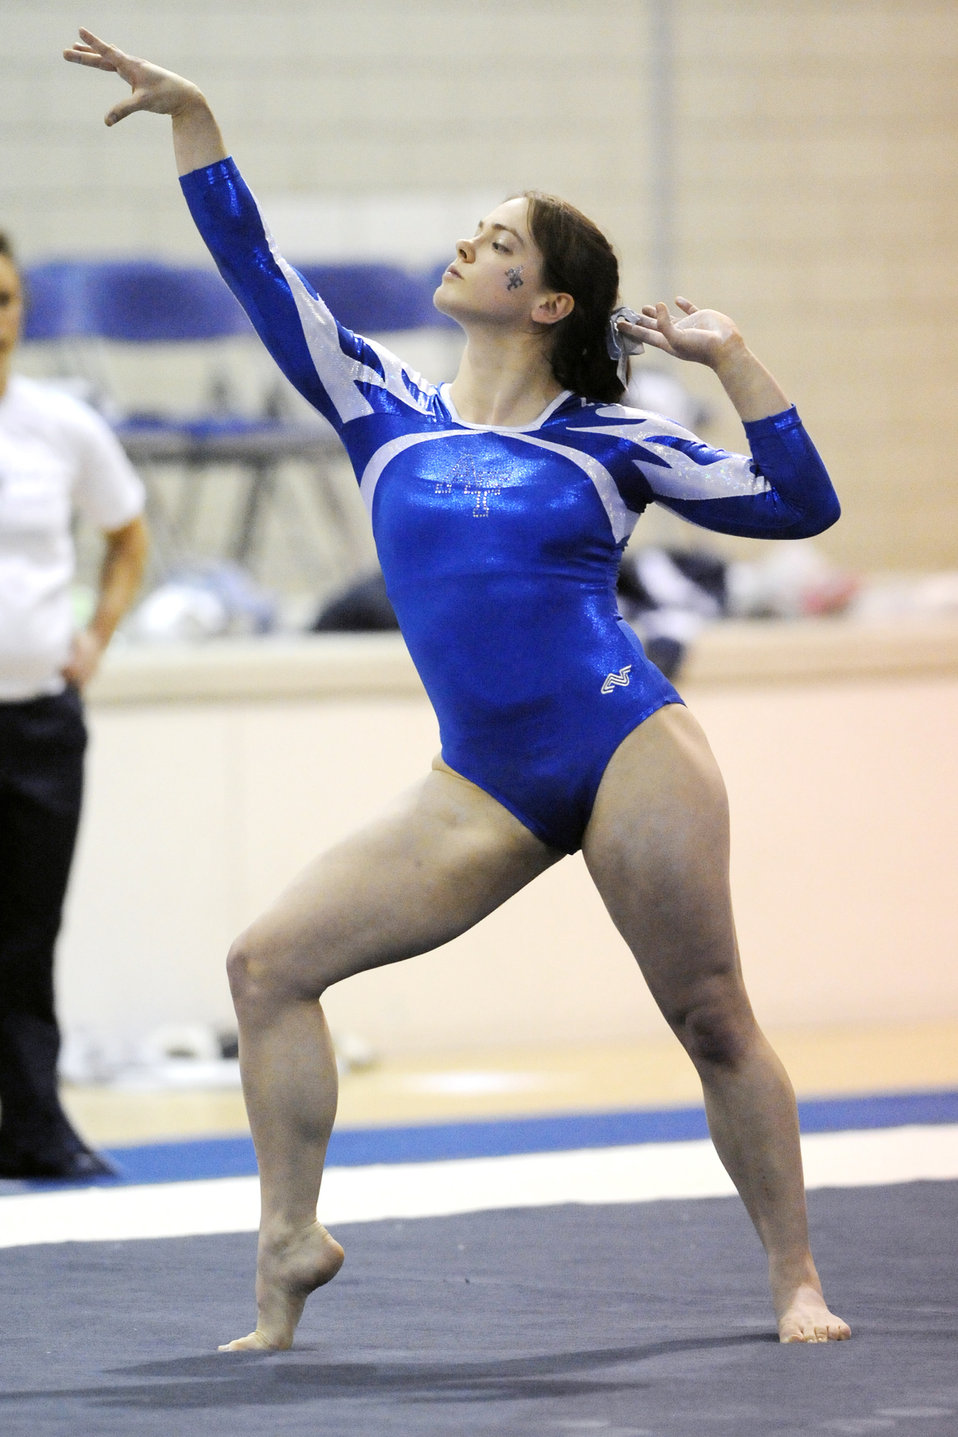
Falcon gymnasts compete against UC Davis

U.S. Air Force Academy sophomore Jenna Dudley poses in her floor routine during Air Force's meet against University of California Davis Jan. 30, 2010, in the Cadet Gymnasium in Colorado. Air Force lost the meet 191.575 to 185.300 despite two event titles. Dudley took the title in the floor exercise with a tally of 9.775. She also finished in the top five of every event and placed second in the all-around with a score of 38.425.